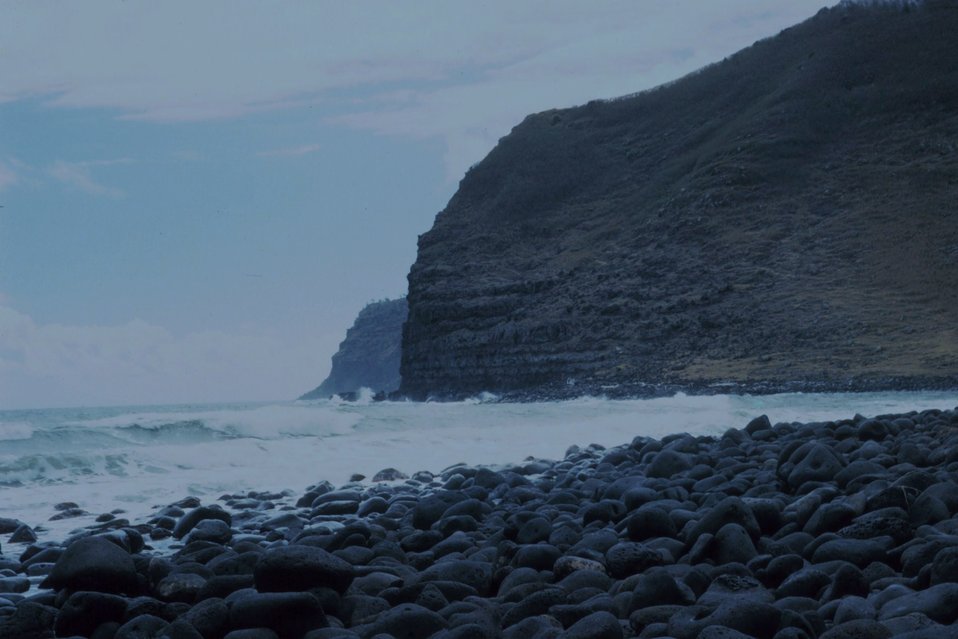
Halawa Bay